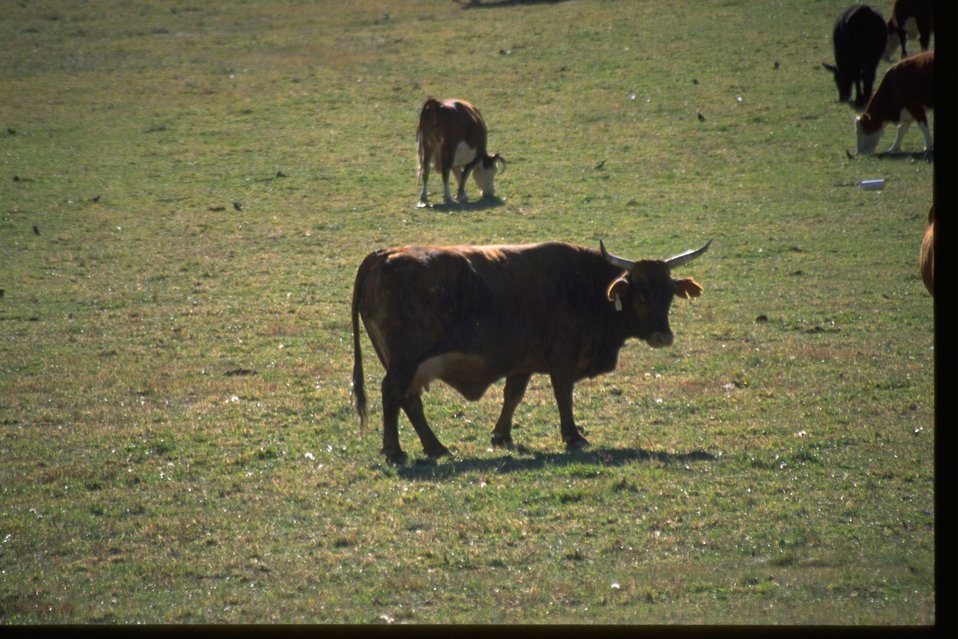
Cow in private pasture near section 2 of the John Day River.